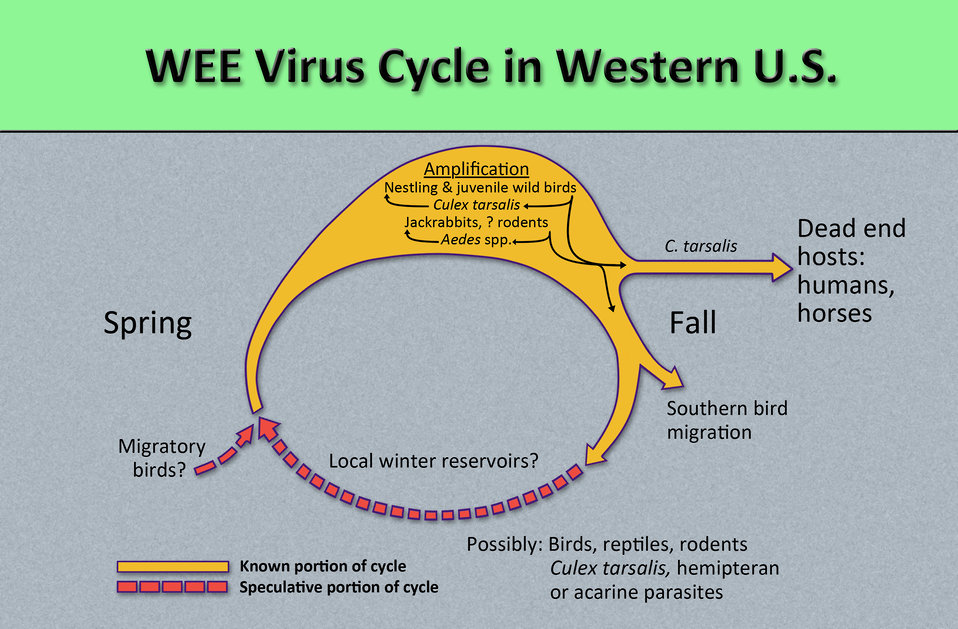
This diagram illustrates the methods by which the arbovirus, Western equine encephalitis virus (WEEV) reproduces and amplifies itself in both avian populations, and rodent populations, and is subsequently transmitted to dead end hosts including humans and horses by the Culex tarsalis mosquito.